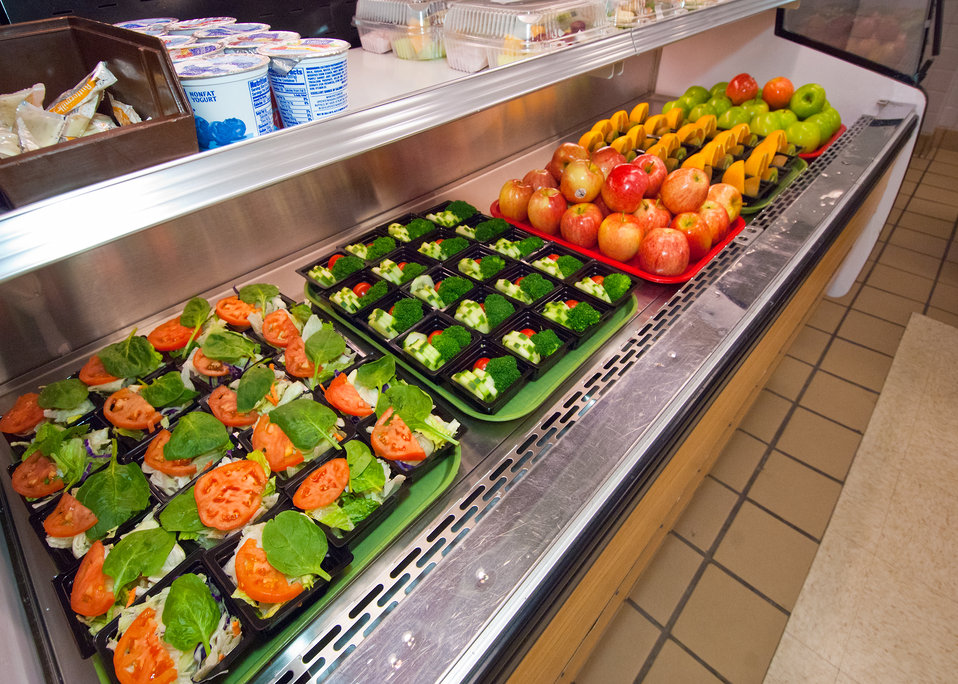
Healthy choices of fresh fruit, salads and vegetables at Washington-Lee High School in Arlington, Virginia for lunch service on Wednesday, October 19, 2011. The fruit, salads and vegetables are available through the National School Lunch Program. The National School Lunch Program is a federally assisted meal program administered by the United States Department of Agriculture, Food and Nutrition Service operating in public, nonprofit private schools and residential child care institutions. It provides nutritionally balanced, low-cost or free lunches to children each school day.